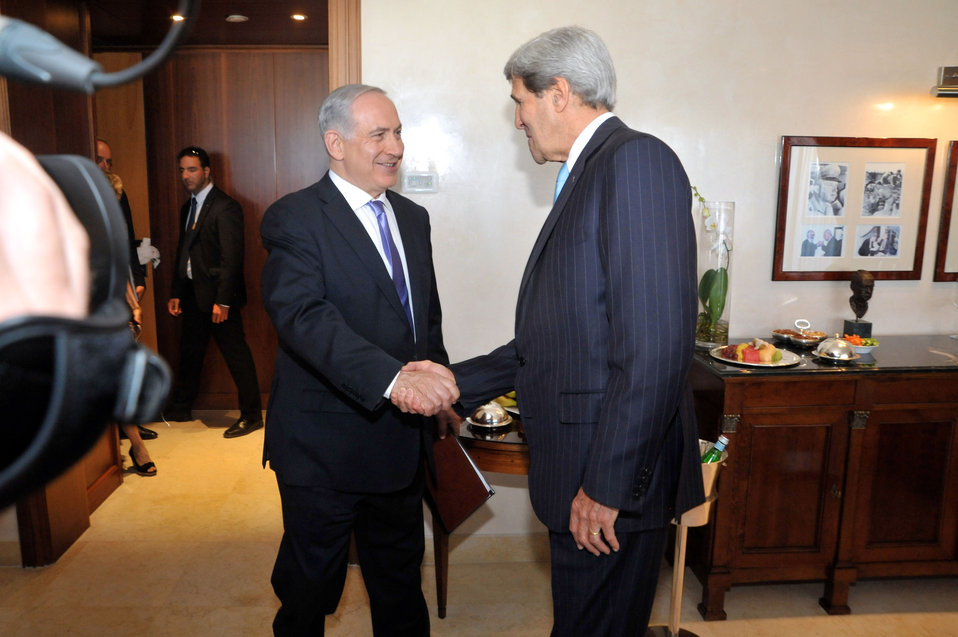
Israeli Prime Minister Netanyahu Greets Secretary Kerry

U.S. Secretary of State John Kerry is greeted by Israeli Prime Minister Benjamin Netanyahu as he arrives for a meeting in Jerusalem on June 28, 2013.